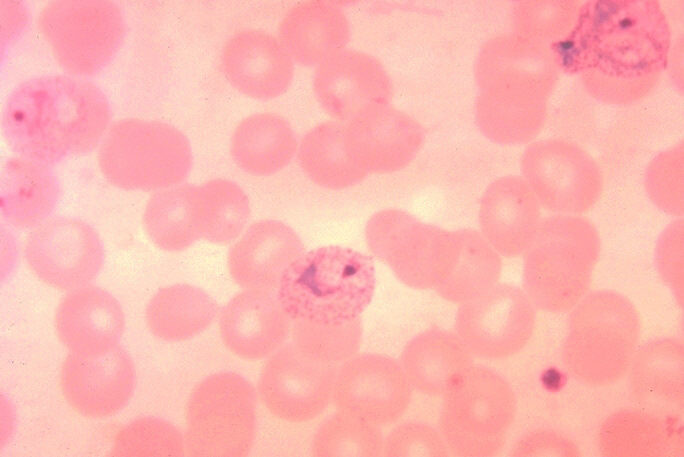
Plasmodium vivax trophozoite in blood smear.